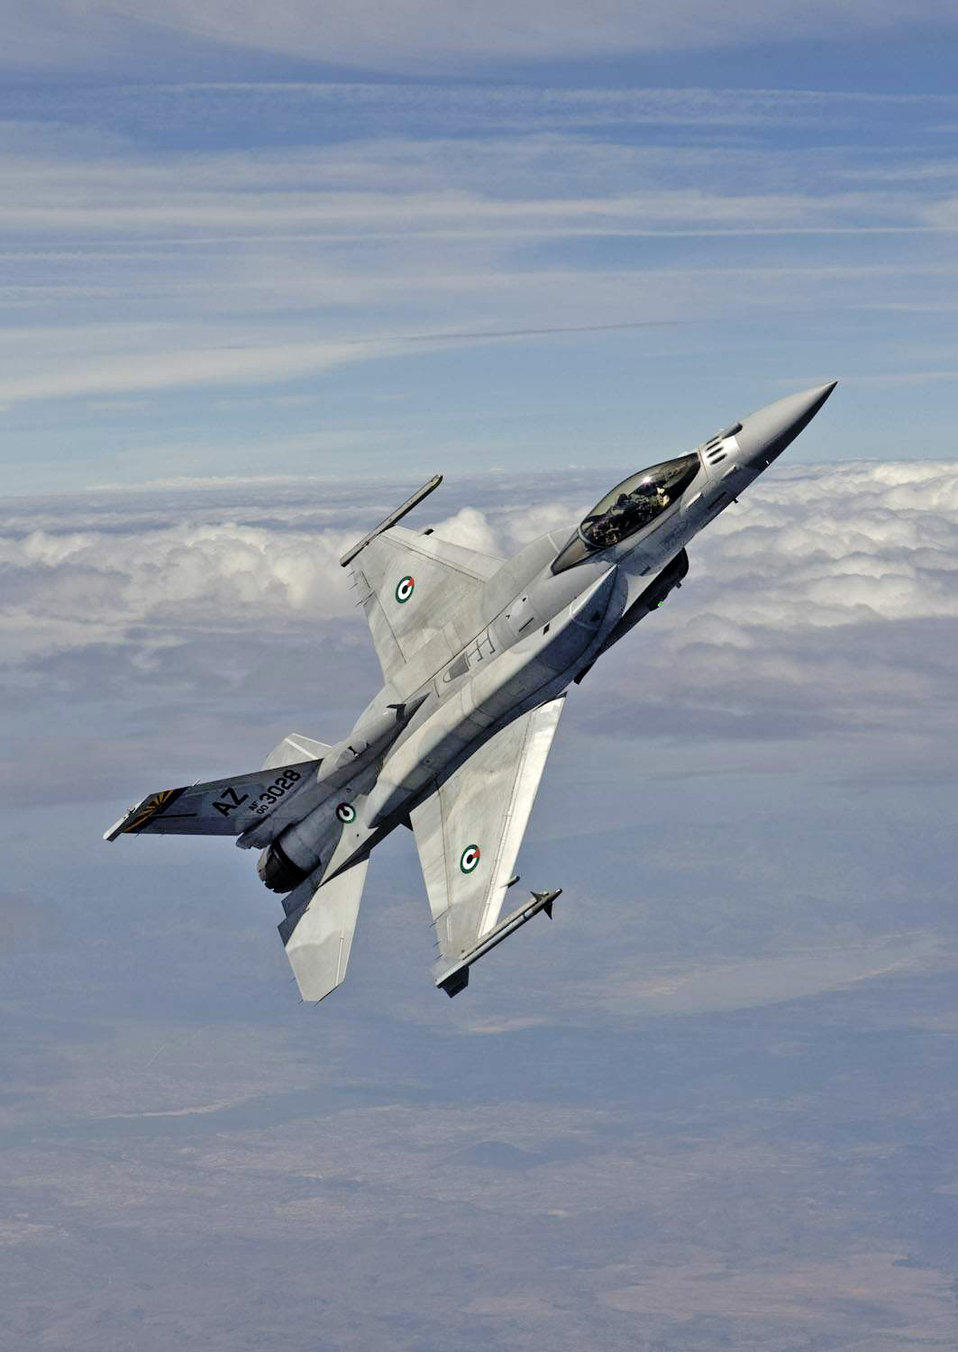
United Arab Emirates take off for first Red Flag

A United Arab Emirates F-16E Desert Falcon, block 60, flies over Southern Arizona Aug. 11 before heading to the country's first Red Flag at Nellis Air Force Base, Nev. The 162nd Fighter Wing at Tucson International Airport maintains and operates a squadron of block 60s for the purpose of training the UAE air force in the advanced multi-role fighter.